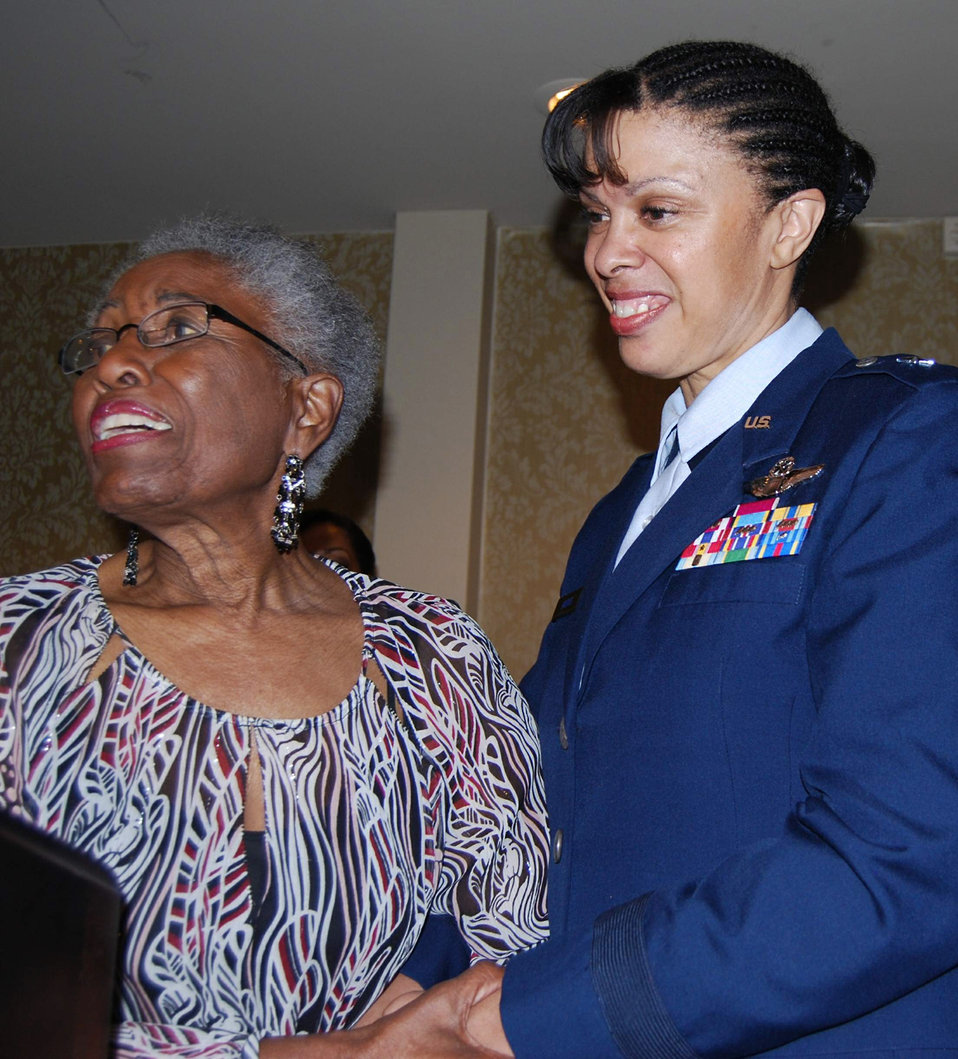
Nancy Leftenant-Colon

Retired Maj. Nancy Leftenant-Colon pins on brigadier general for Stayce Harris during a historic ceremony.